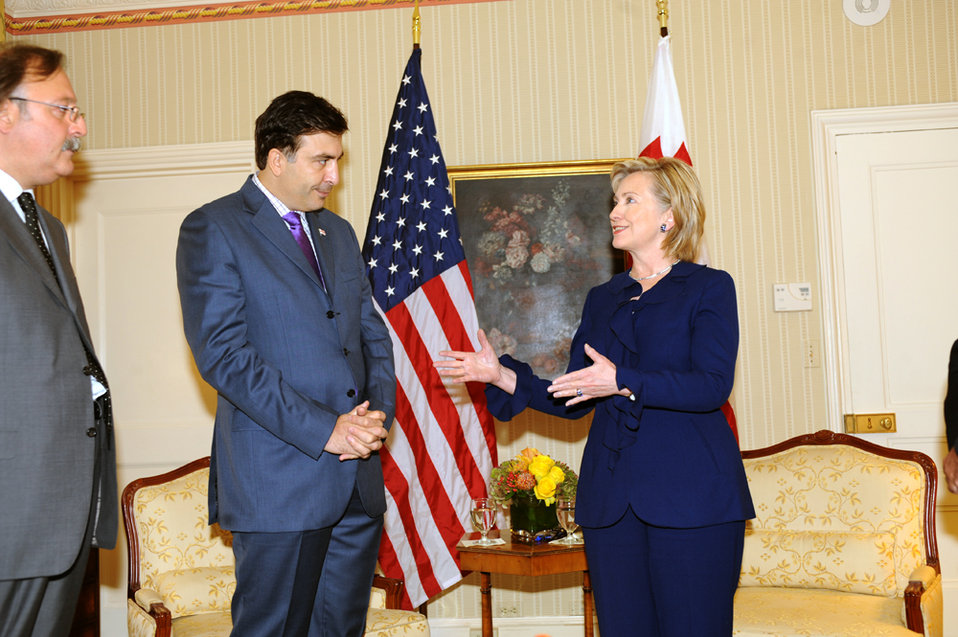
UNGA 2009: Secretary Clinton Meets With Georgian President

U.S. Secretary of State Hillary Rodham Clinton meets with Georgian President Mikheil Saakashvili at the Waldorf Astoria hotel during the 64th Session of the UN General Assembly in New York City, New York September 21, 2009.